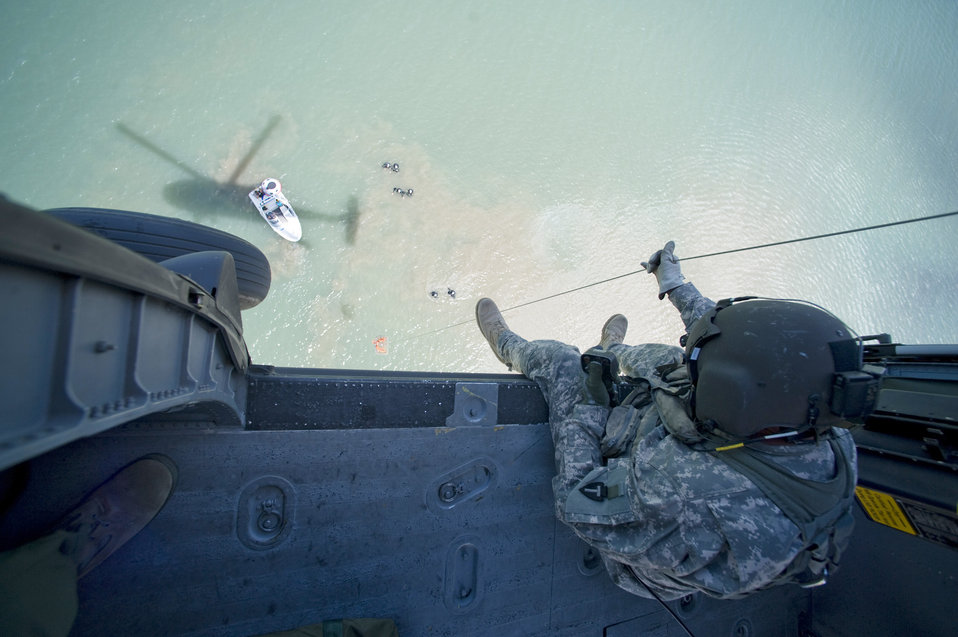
Air Guard flight crews undergo water survival training

U.S. Army Sgt. Teddy Cole lowers a water rescue basket during refresher aircrew water survival training at Canyon Lake, Texas. Sergeant Cole is a UH-60 Black Hawk crew chief assigned to the 149th Aviation Regiment in San Antonio. The refresher training was conducted for members of the 149th Fighter Wing also based in San Antonio. Both units belong to the Texas National Guard.